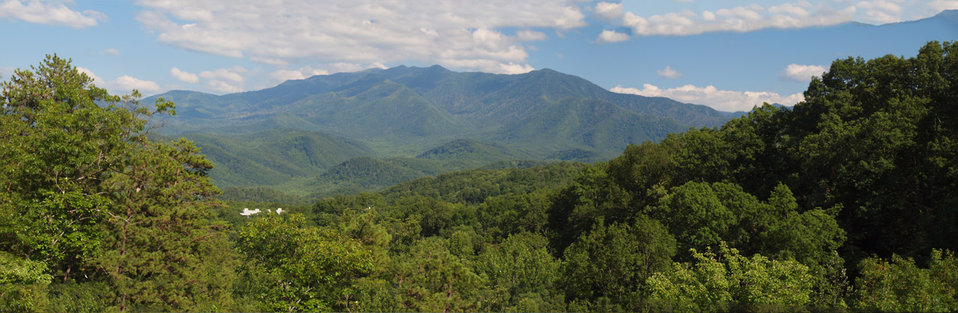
Mt leconte

Panoramic view of mt leconte.